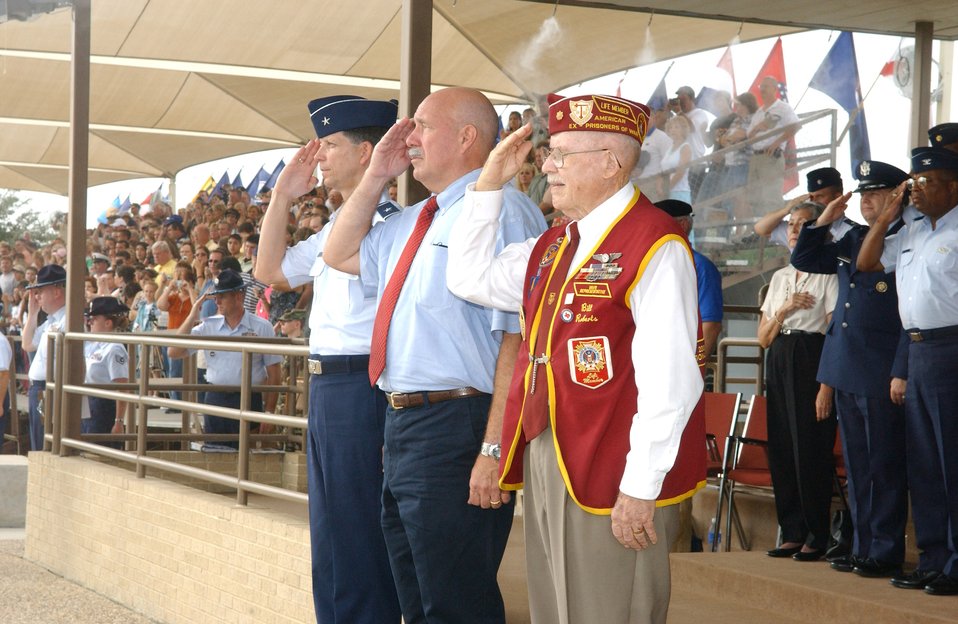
Basic training graduation ceremony focuses on POW/MIA Day

Two former POWs joined the training wing commander as reviewing officials during the basic military training graduation ceremony Sept. 15 at Lackland Air Force Base, Texas. Standing with Brig. Gen. Darrell D. Jones, 37th Training Wing commander, are retired Col. Joseph Milligan and retired Maj. Bill Roberts. Colonel Milligan was shot down May 20, 1967, while flying his 113th combat mission in an F-4 Phantom over North Vietnam. Major Roberts was flying in a B-17 Flying Fortress during World War II when he was shot down over Czechoslovakia.